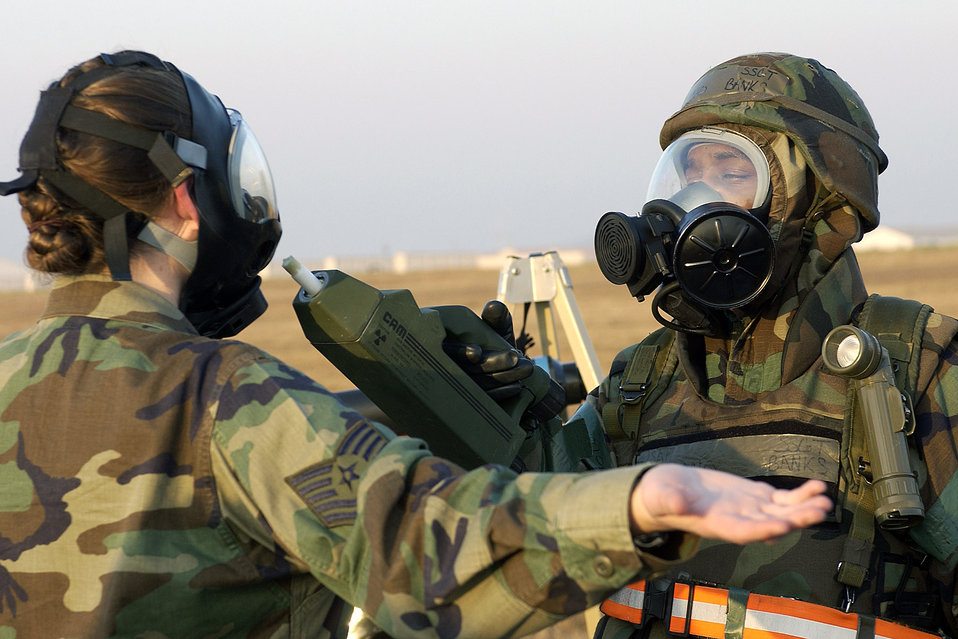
Testing readiness at Kunsan

Staff Sgt. Toriano Banks scans Staff Sgt. Sherrie Cole for any sign of chemical contamination during the Peninsula Operation Readiness Exercise Nov. 7 at Kunsan Air Base, South Korea. The exercise was conducted to ensure base members remain ready to execute its mission. Sergeant Banks is assigned to the 8th Comptroller Squadron, and Sergeant Cole is from the 8th Maintenance Operations Squadron.